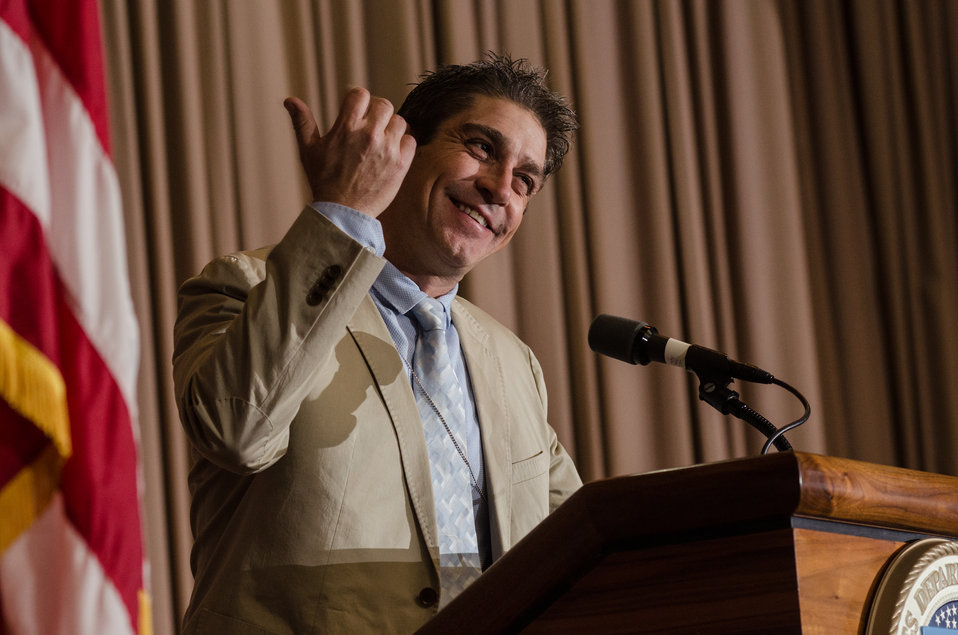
Keynote Speaker Poet Richard Blanco talks about differences in culture, language, and his childhood,at the 2013 National Hispanic Heritage Month ”Hispanics: Serving and Leading our Nation with Pride and Honor,” on Thursday, Sept. 19, 2013, in the Jefferson Auditorium, USDA Headquarters, Washington, D.C. Mr. Blanco stands as the youngest, first Latino, and first openly gay person to serve as the Presidential inaugural poet, on January 21 of this year.